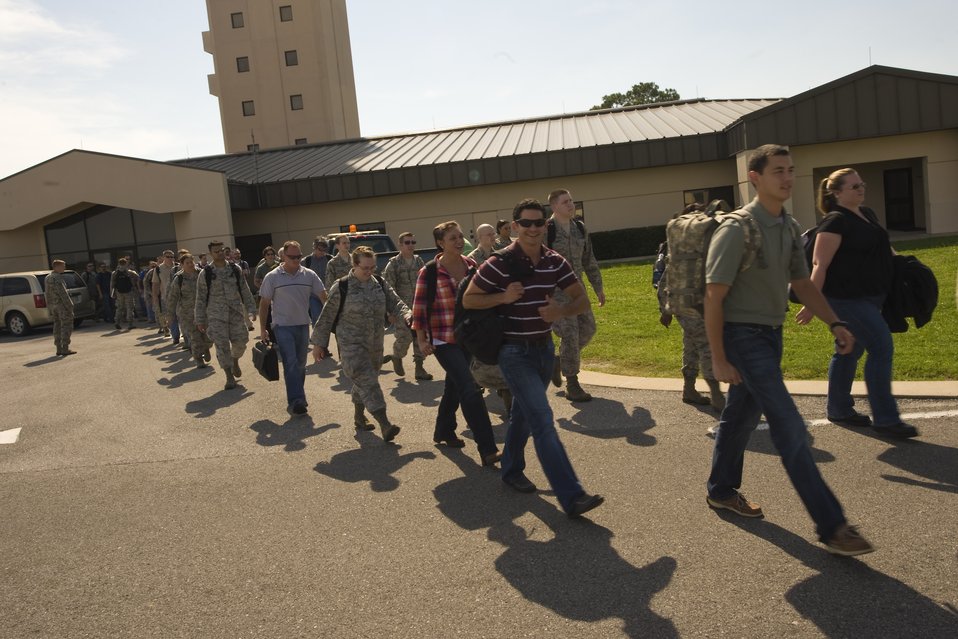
Tropical Storm Preparation

Airmen of 11th Intelligence Squadron prepare for pre-storm departure at Hurlburt Field, Fla., Aug. 26, 2012. Hurlburt Field assets were being evacuated as Tropical Storm Isaac approaches the Gulf Coast region.